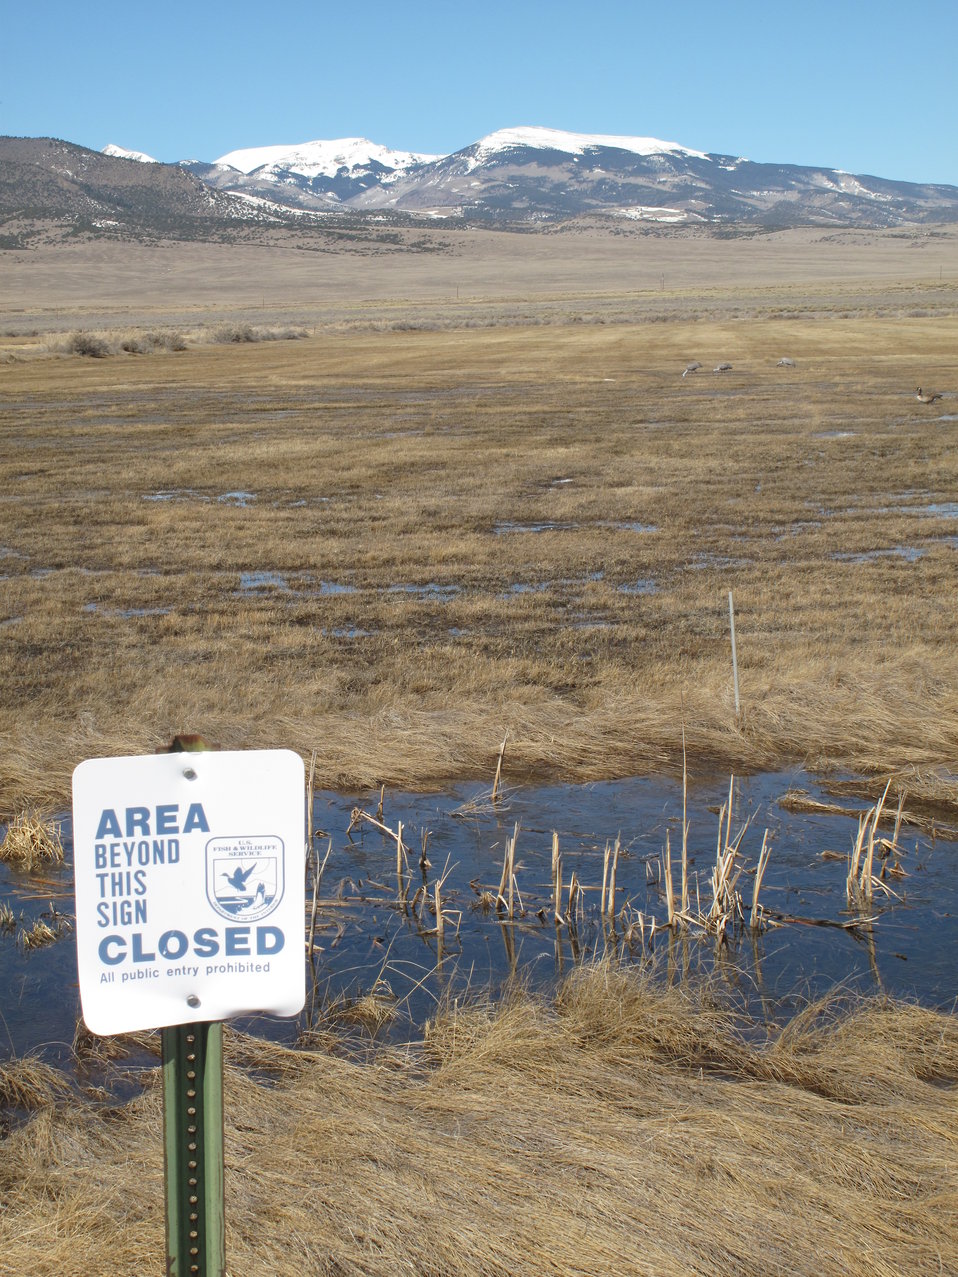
Monte Vista National Wildlife Refuge Hosting Cranes

The Monte Vista National Wildlife Refuge serves as a stopover point for cranes during their northward and southward migrations each year. The birds using the Refuge nest primarily in Montana, Idaho and Wyoming and spend winters in New Mexico, Arizona, and Mexico. However, some cranes that visit the Refuge may nest as far away as Alaska and western Siberia.